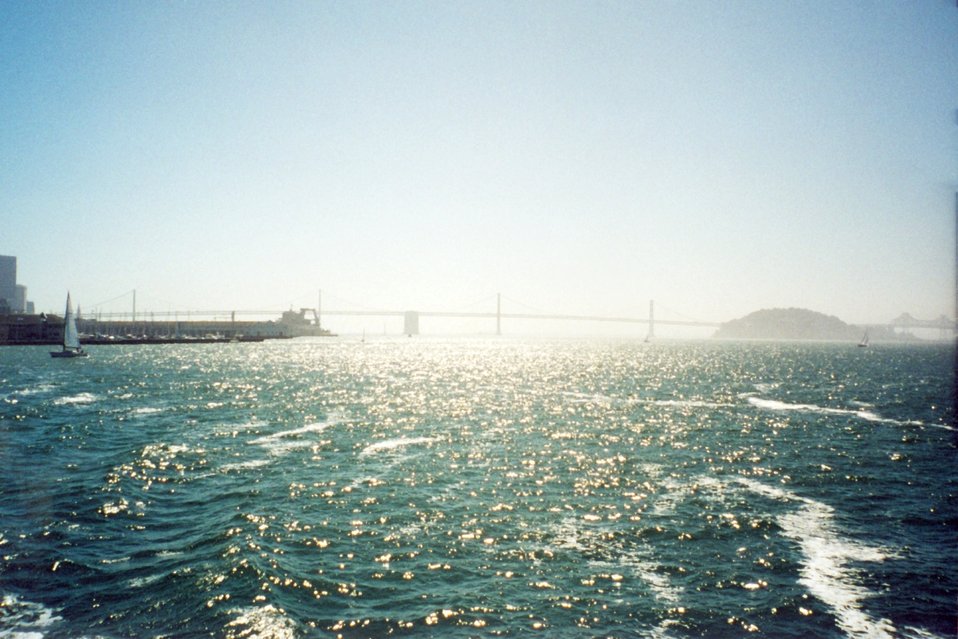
Looking down the bay towards the San Francisco - Oakland Bay Bridge on a hazy afternoon.